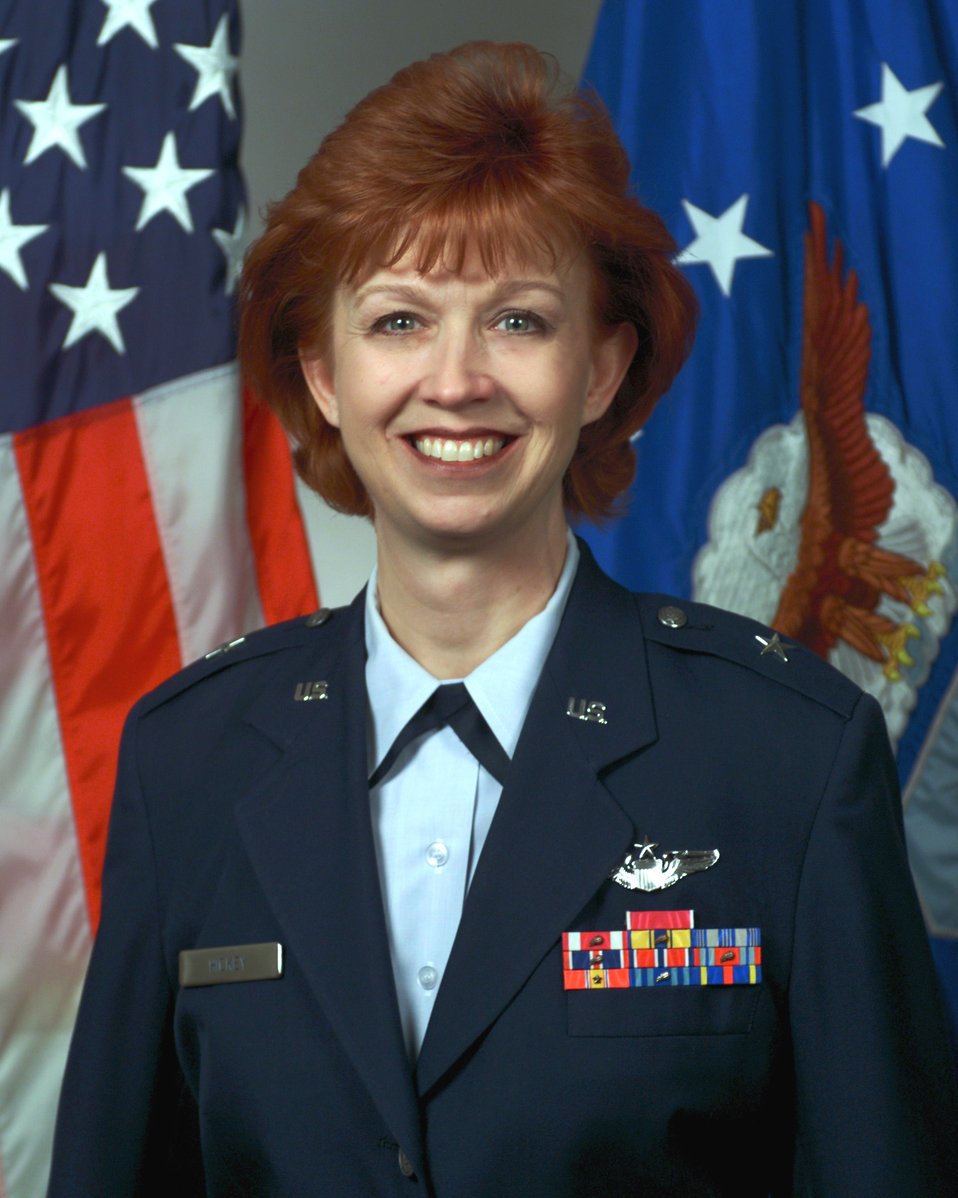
A woman of many firsts

Brig. Gen. Allison Hickey was one of the 96 women to graduate in the U.S. Air Force Academy class of 1980.